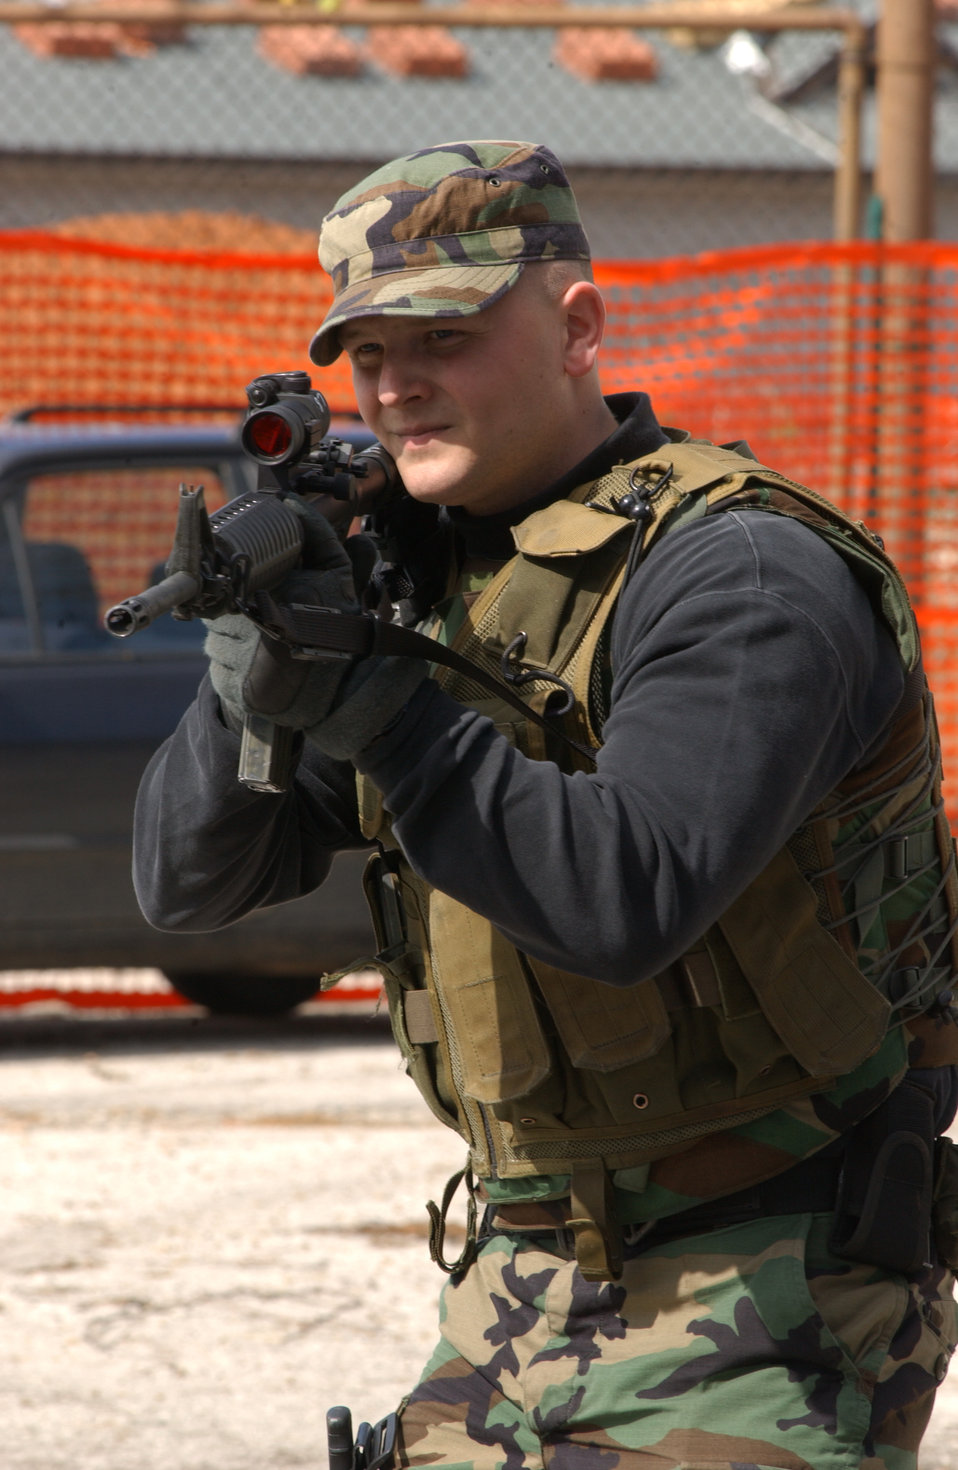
Taking aim

AVIANO AIR BASE, Italy -- Senior Airman Casey Snyder perfects his movements during